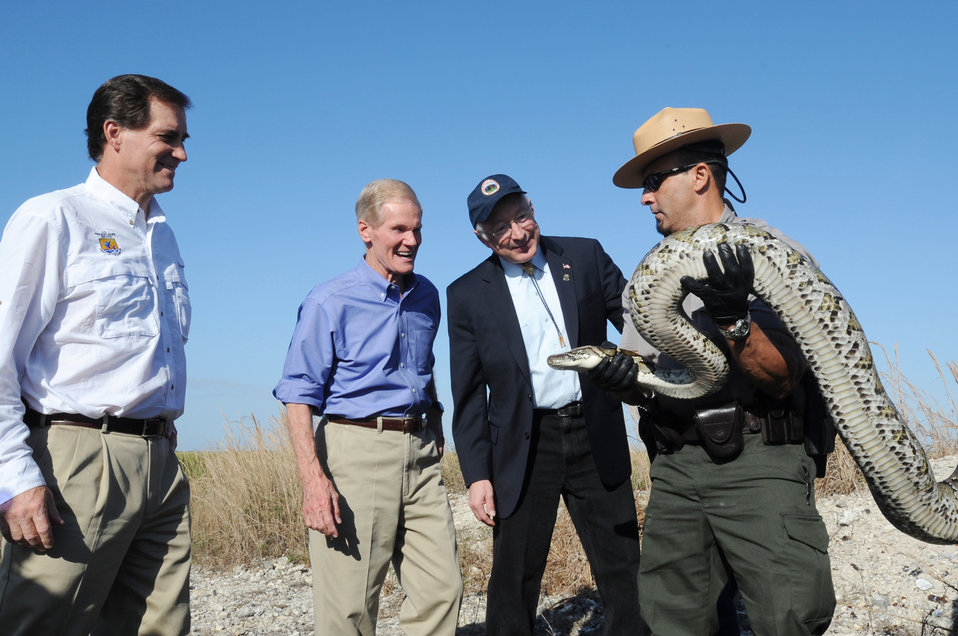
Secretary Salazar, Senator Ben Nelson, and Dan Ashe Greet Snake